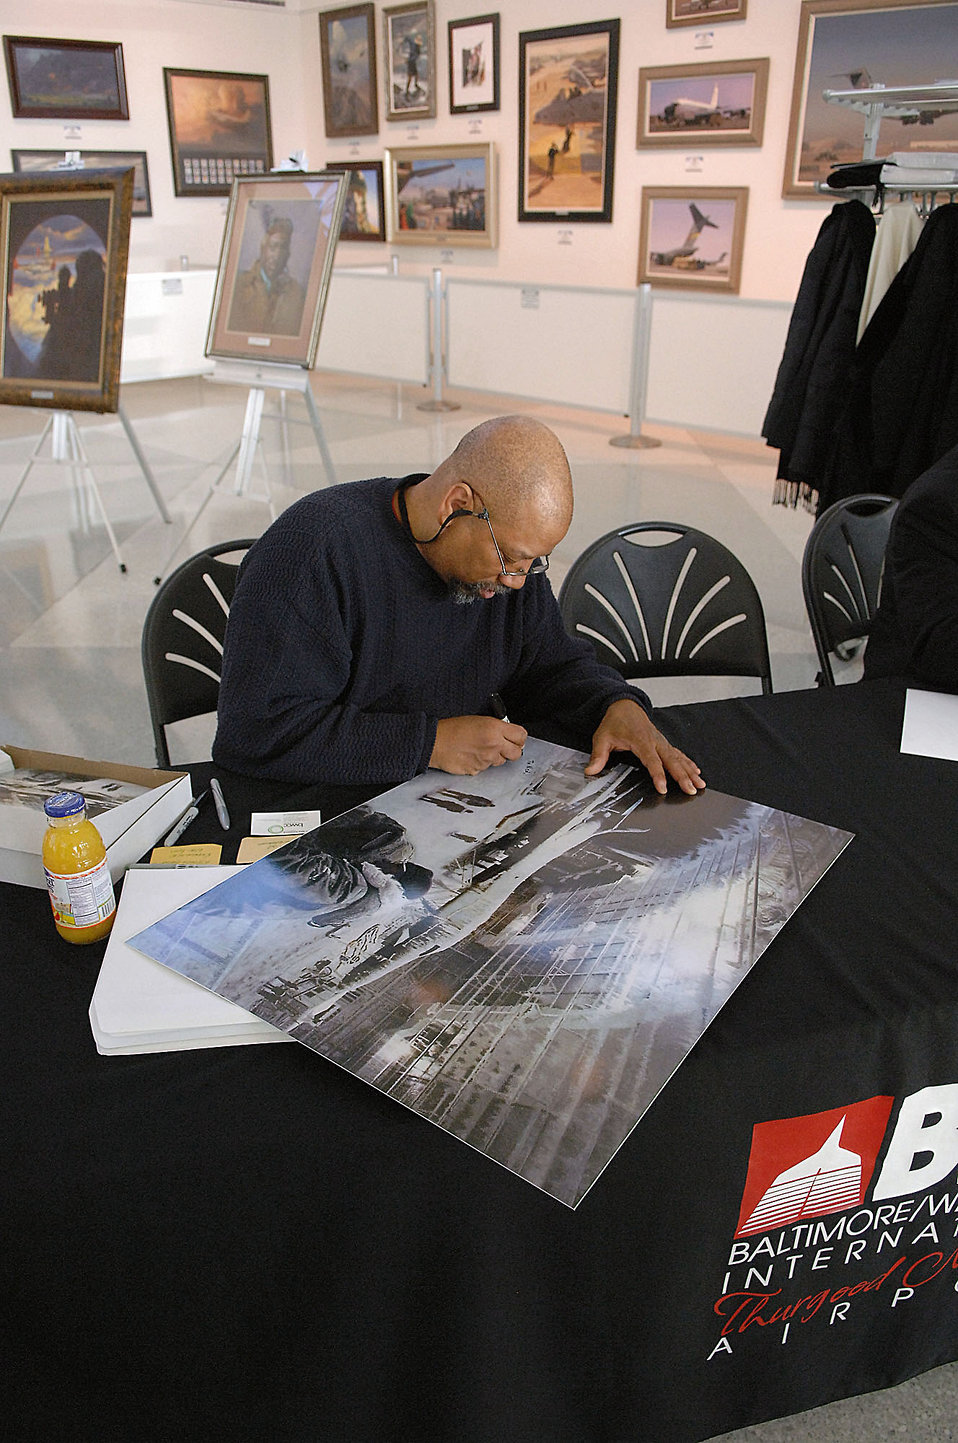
AF heritage, history on display at BWI airport

Artist Charles Lilly signs a lithograph of his painting titled